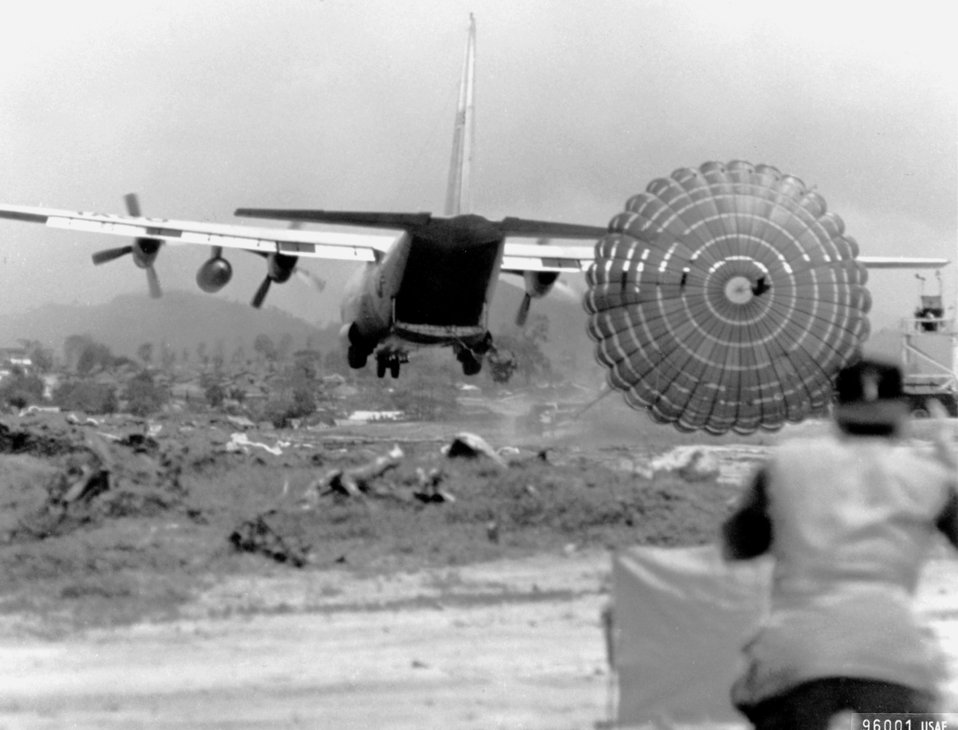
Delivering supplies

1960s -- Using the Low Altitude Parachute Extraction System (LAPES), a U.S. Air Force C-130 Hercules crew delivers a load of supplies to the U.S. Army 1st Cavalry Division at An Khe. With LAPES, platform-mounted loads are pulled from the rear of a transport plane at an altitude of about five feet. The delivery system is designed for resupply to narrow drop zones.